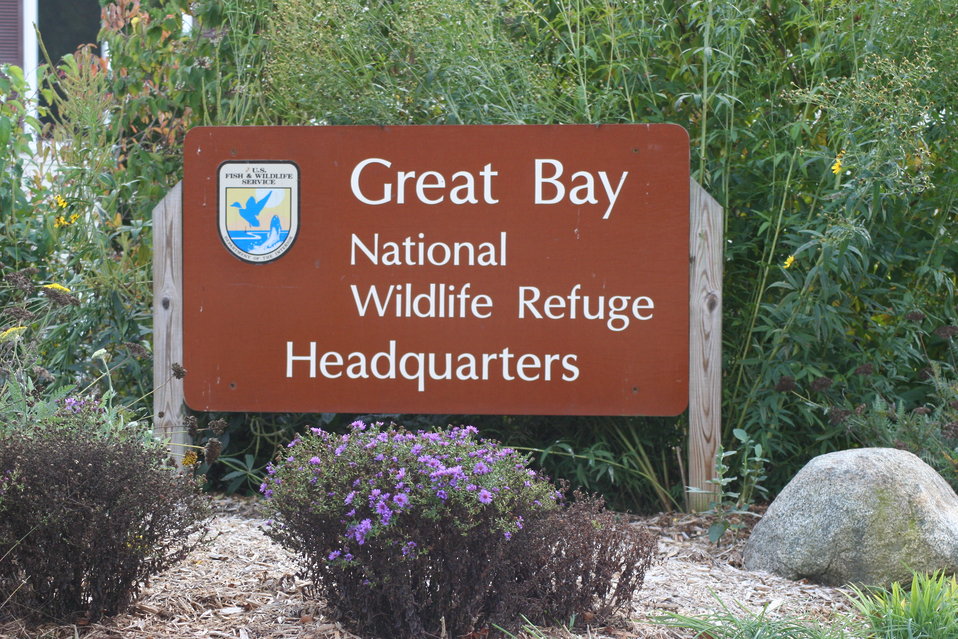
Great Bay National Wildlife Refuge, Newington, NH.